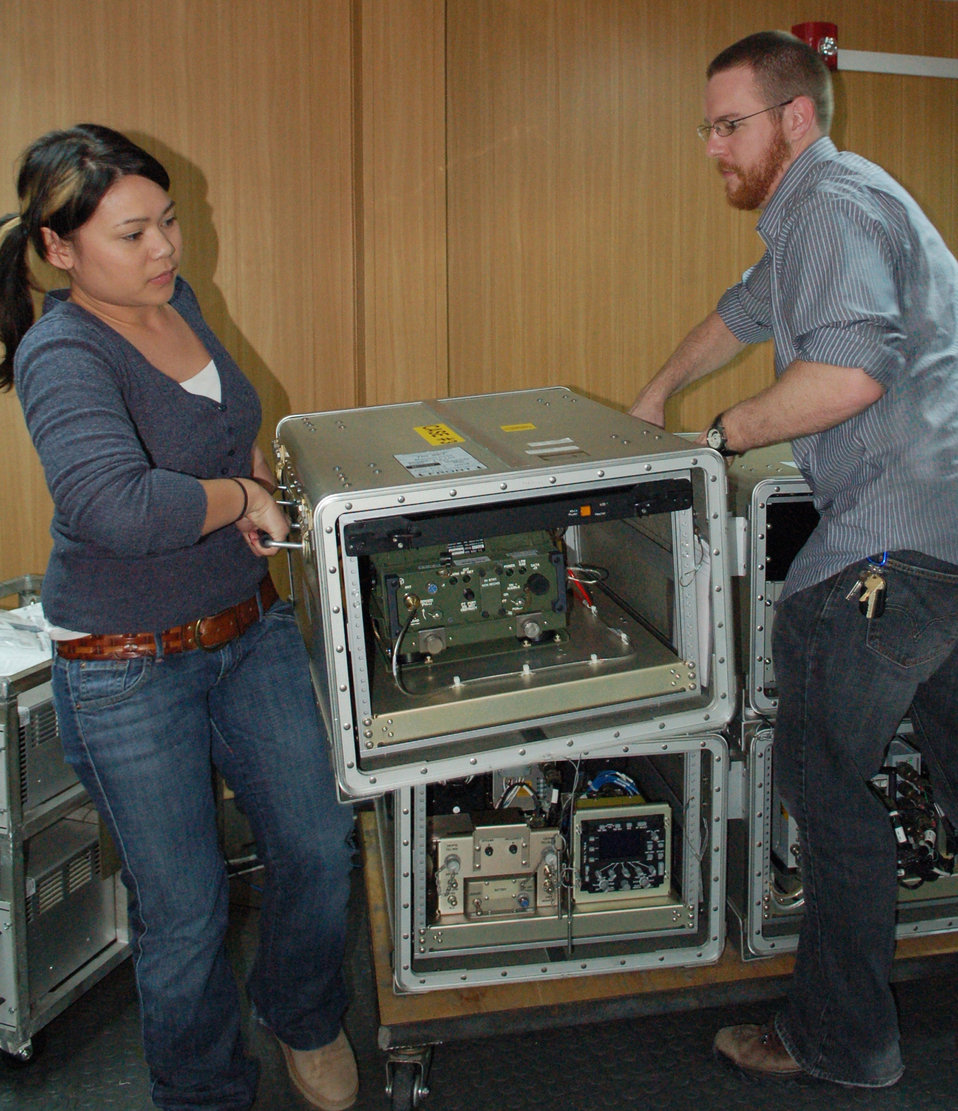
Manas KC-135s revolutionize combat operations

Andrina Luczon and Keith Lareau break down a Roll-On-Beyond-Line-Of-Sight Enhancement System